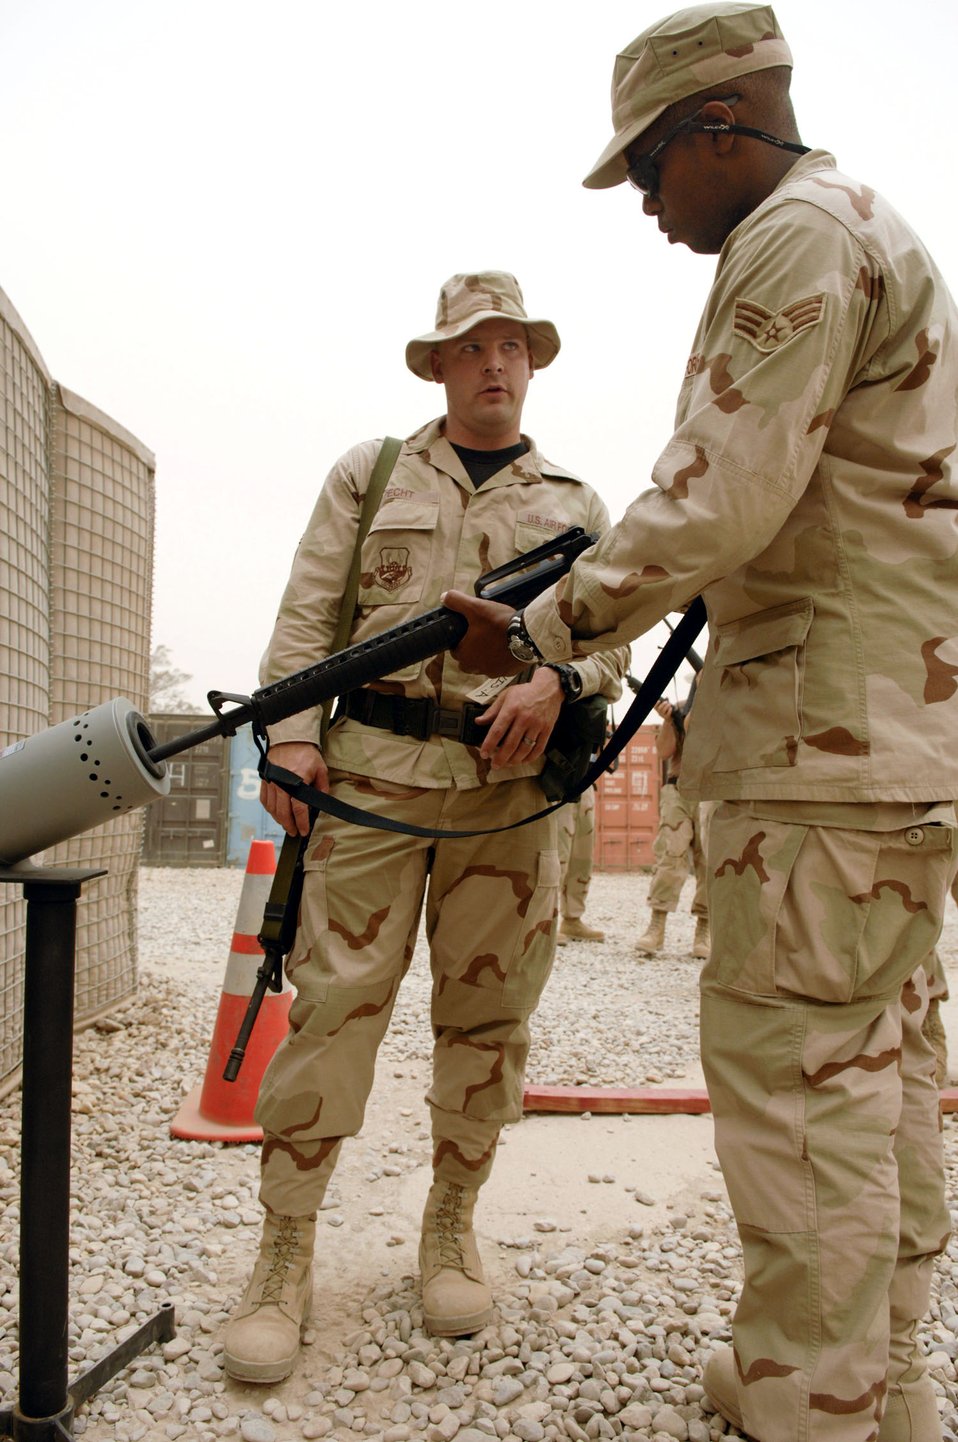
Fully armed

Tech. Sgt. Steven Pecht (left) reviews clearing procedures for the M-16 rifle with Senior Airman Alexander Davis during a base-wide arming exercise June 14 at Ali Air Base, Iraq. Both are members of the 407th Expeditionary Communications Squadron. Ali AB Airmen participated in the exercise to help fine-tune weapons distributing procedures in case of a real-world threat to the base.